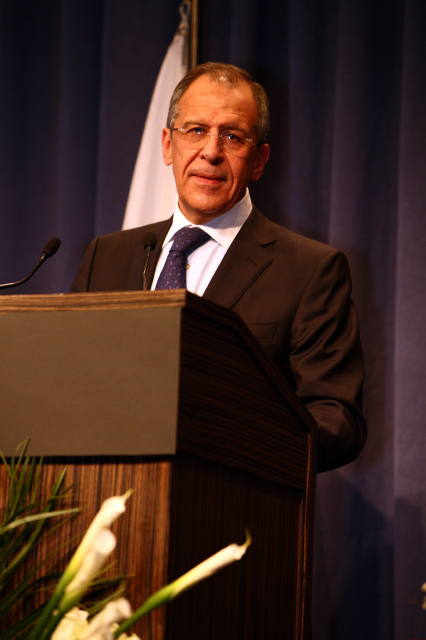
Press Conference With Russian Foreign Minister

Press conference after dinner meeting between U.S. Secretary of State Hillary Rodham Clinton and Russian Foreign Minister Sergey Lavrov in Geneva, Switzerland March 6, 2009.